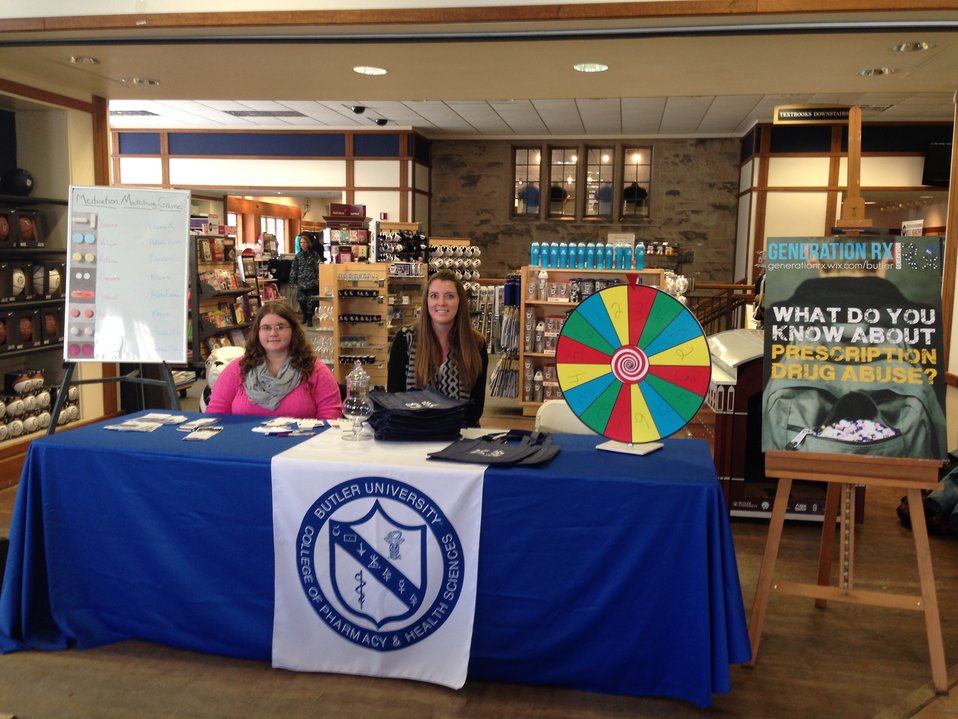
BU Generation Rx holds NDFW Event

Students from Butler University Generation Rx hold their 2014 NDFW Event in Indianapolis, IN.